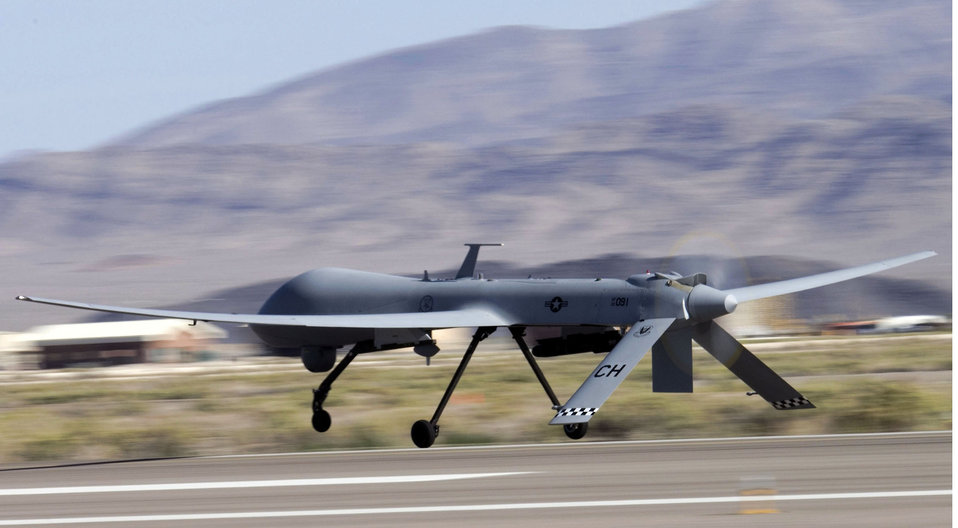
Unmanned aircraft crews strive to support warfighters

An MQ-1B Predator unmanned aircraft takes off for a training mission at Creech Air Force Base, Nev.